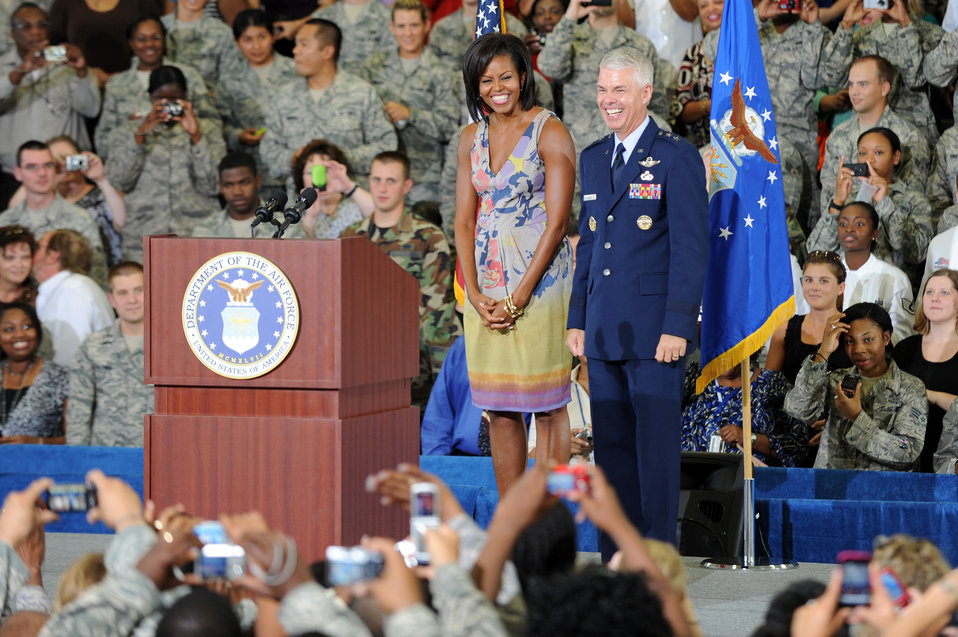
First lady speaks on taking care of military families

First Lady Michelle Obama and Maj. Gen. Charles R. Davis smile to the crowd before Ms. Obama gave a speech on family values Oct. 15 at Eglin Air Force Base, Fla. Ms. Obama praised the Air Force during her speech for programs to take care of military families like the Year of the Air Force Family. General Davis is the commander of the Air Armament Center at Eglin.